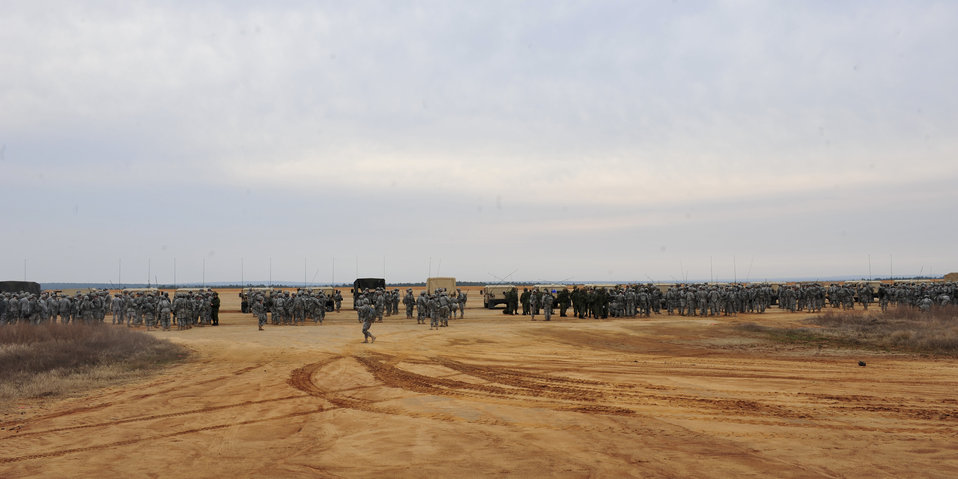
Approximately 1,000 U.S. and Canadian coalition forces survey the drop zone before their jump during Joint Operations Access Exercise 12-01 in Fort Bragg, N.C., Feb. 12, 2012. JOAX tests the ability of airborne units to jump into a hostile environment and conduct combat operations at night. The coaltion units included the U.S. Air Force 93rd Air Ground Operations Wing, U.S. Army's 82nd Airborne Division and Canadian 3rd Royal Canadian Regiment